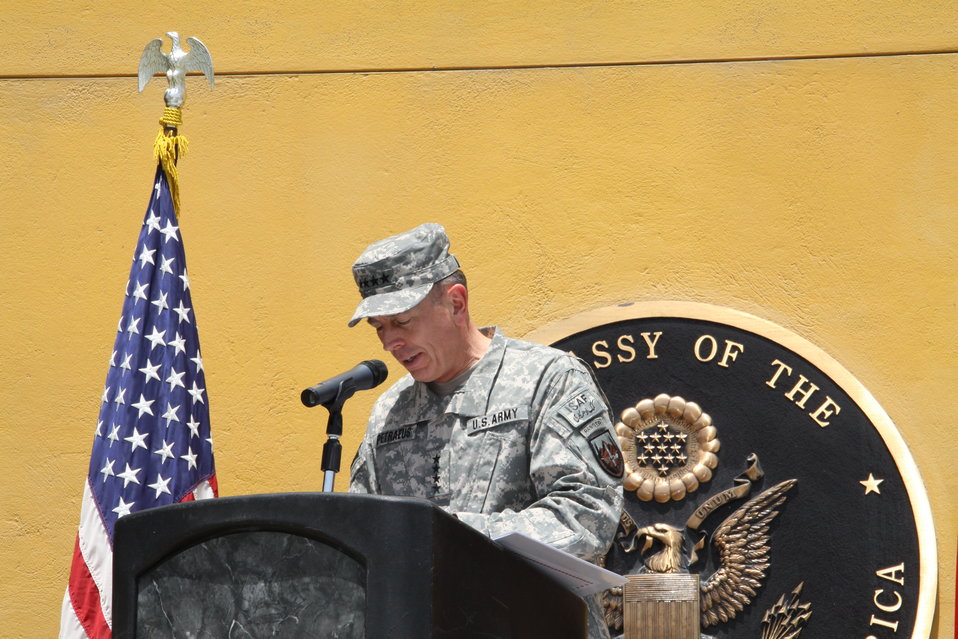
Kabul Official July 4th Celebration